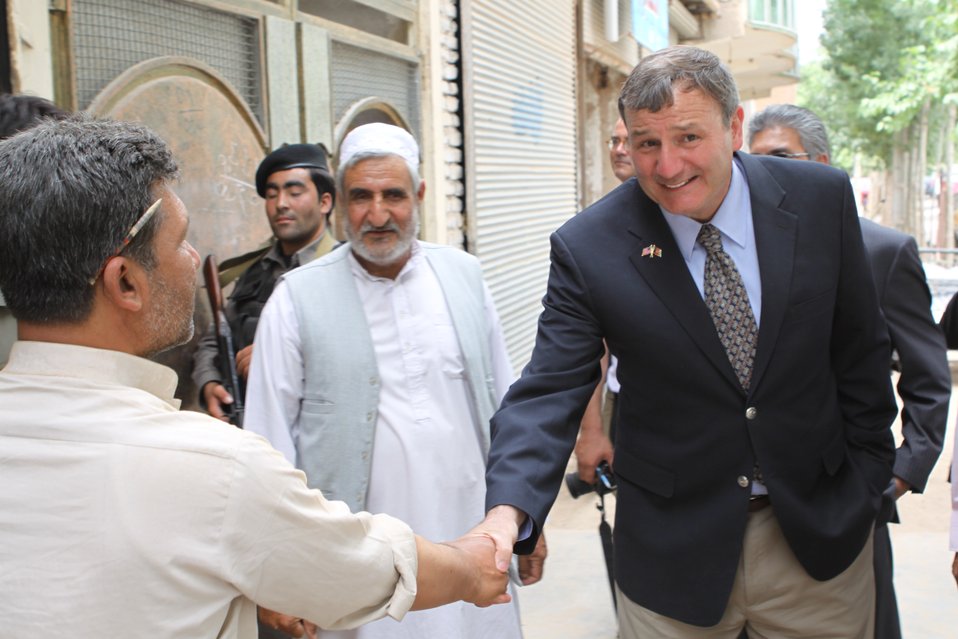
100525 Hirat Marble Conference 691